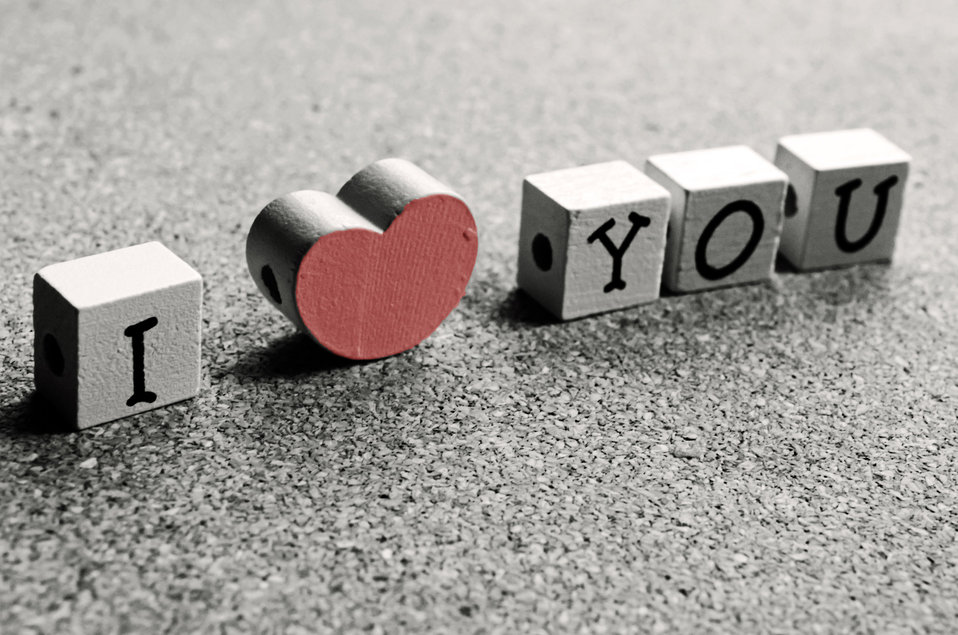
I love you - selection of colors.